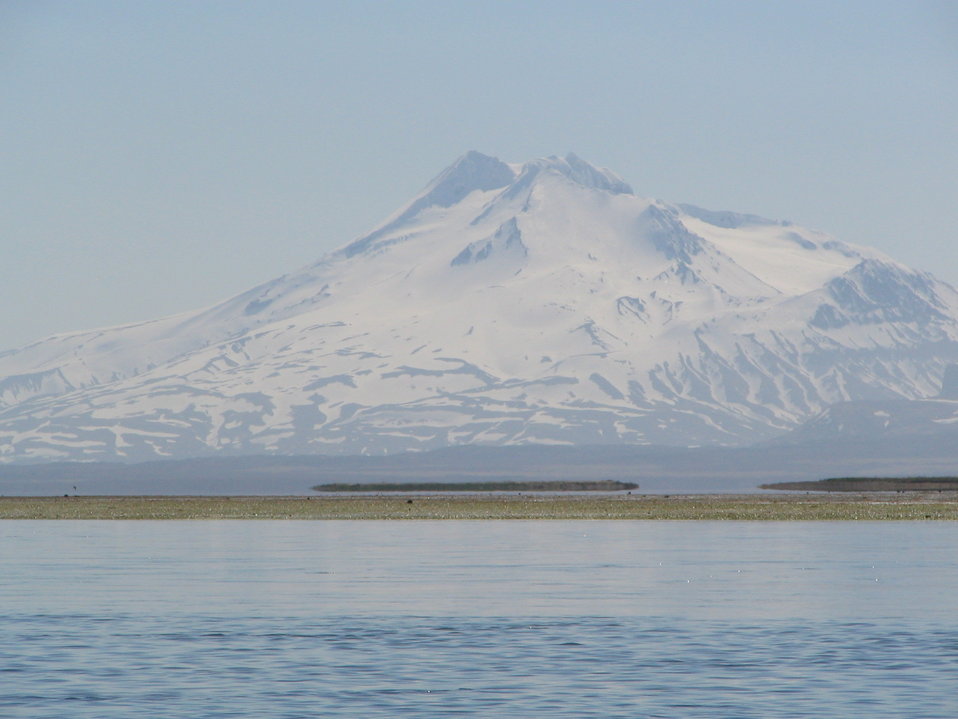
Mt Dutton from Kinzarof

Kinzarof Lagoon, Izembek National Wildlife Refuge